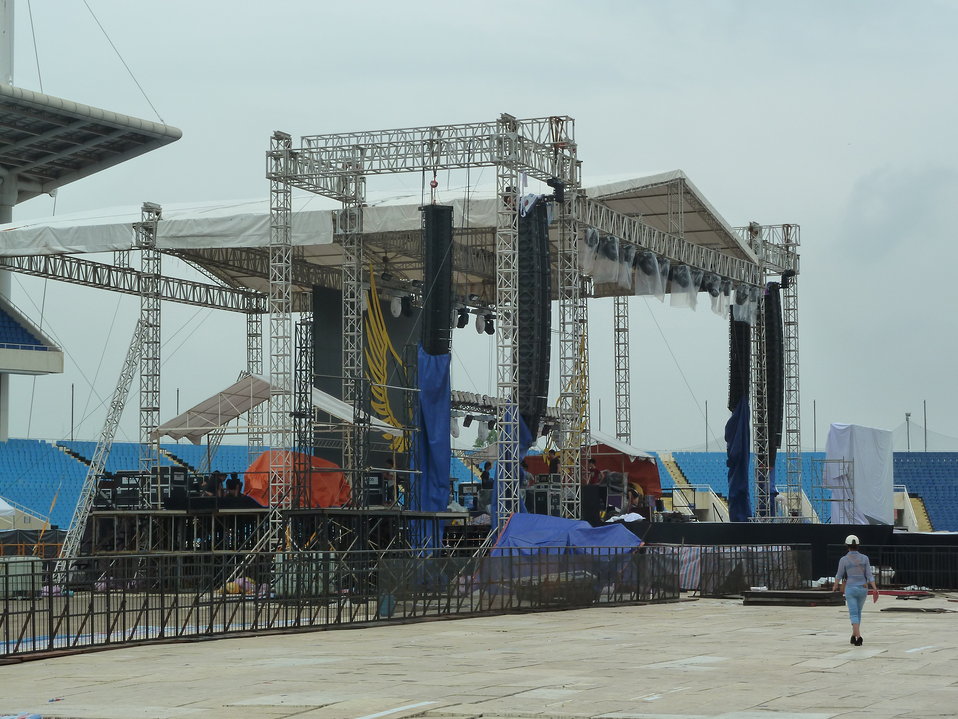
Preparations under way for big MTV EXIT concert in Hanoi on May 26, 2012

Co-sponsored by USAID.